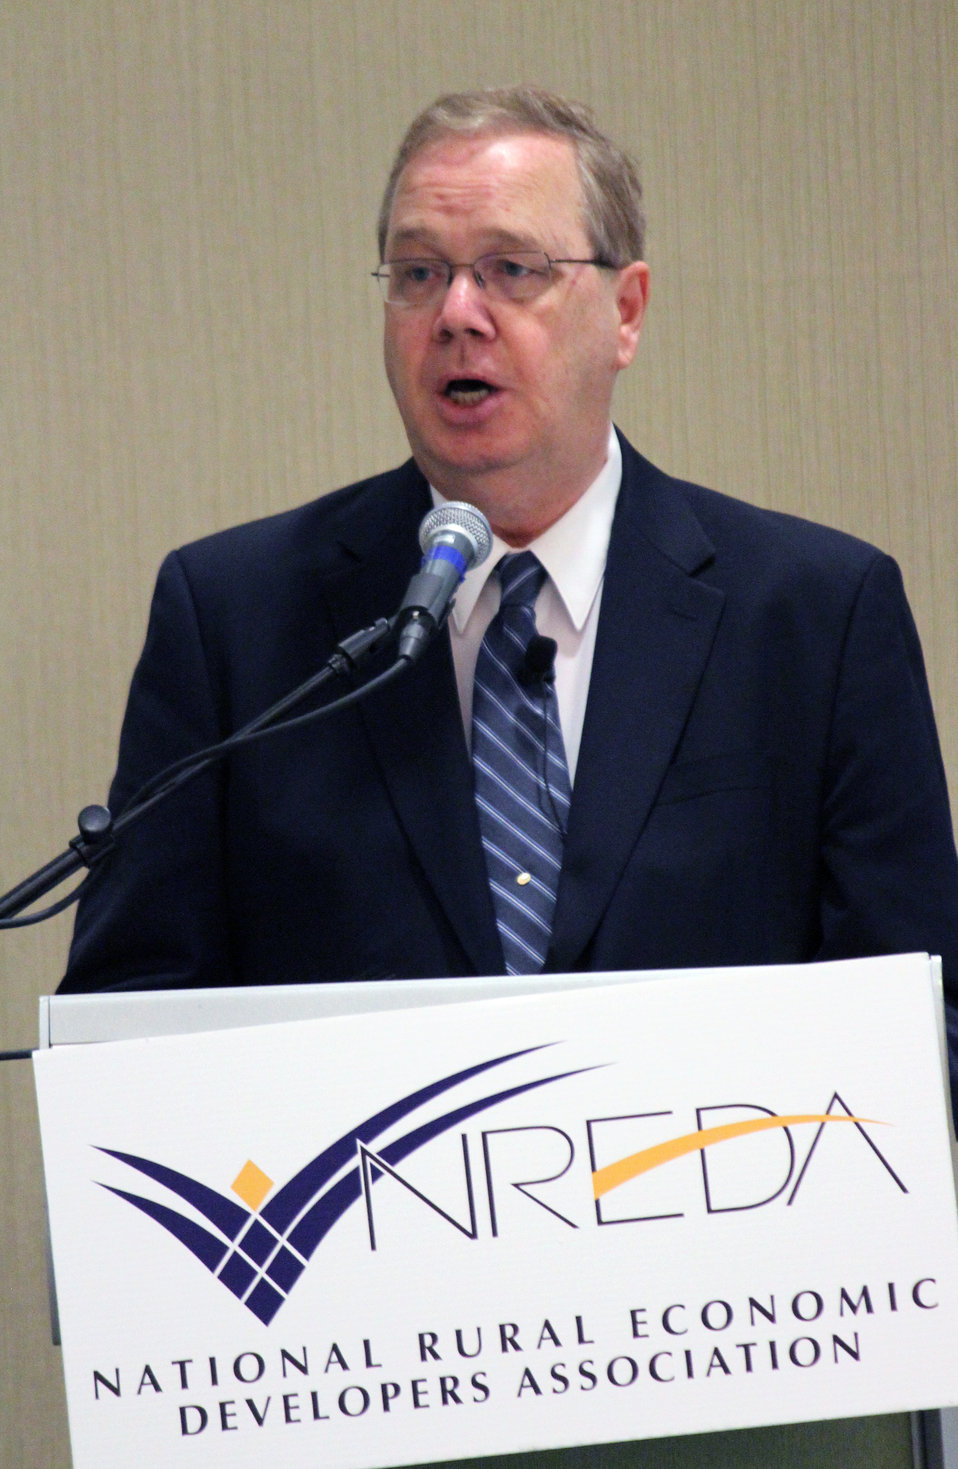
Agriculture Under Secretary for Rural Development (RD) Dallas Tonsanger announces the publication of the Federal Resources for Sustainable Rural Communities guide to the National Rural Economic Developers Association in Indianapolis, IN on Friday, July 20, 2012. This publication is a collaborative effort of the U.S. Department of Agriculture (USDA), the U.S. Department of Housing and Urban Development HUD), the U.S. Department of Transportation (DOT) and the U.S. Environmental Protection Agency (EPA). The guide outlines programs the federal government has available to support rural communities as they promote economic development and enhance the quality of life for rural residents.